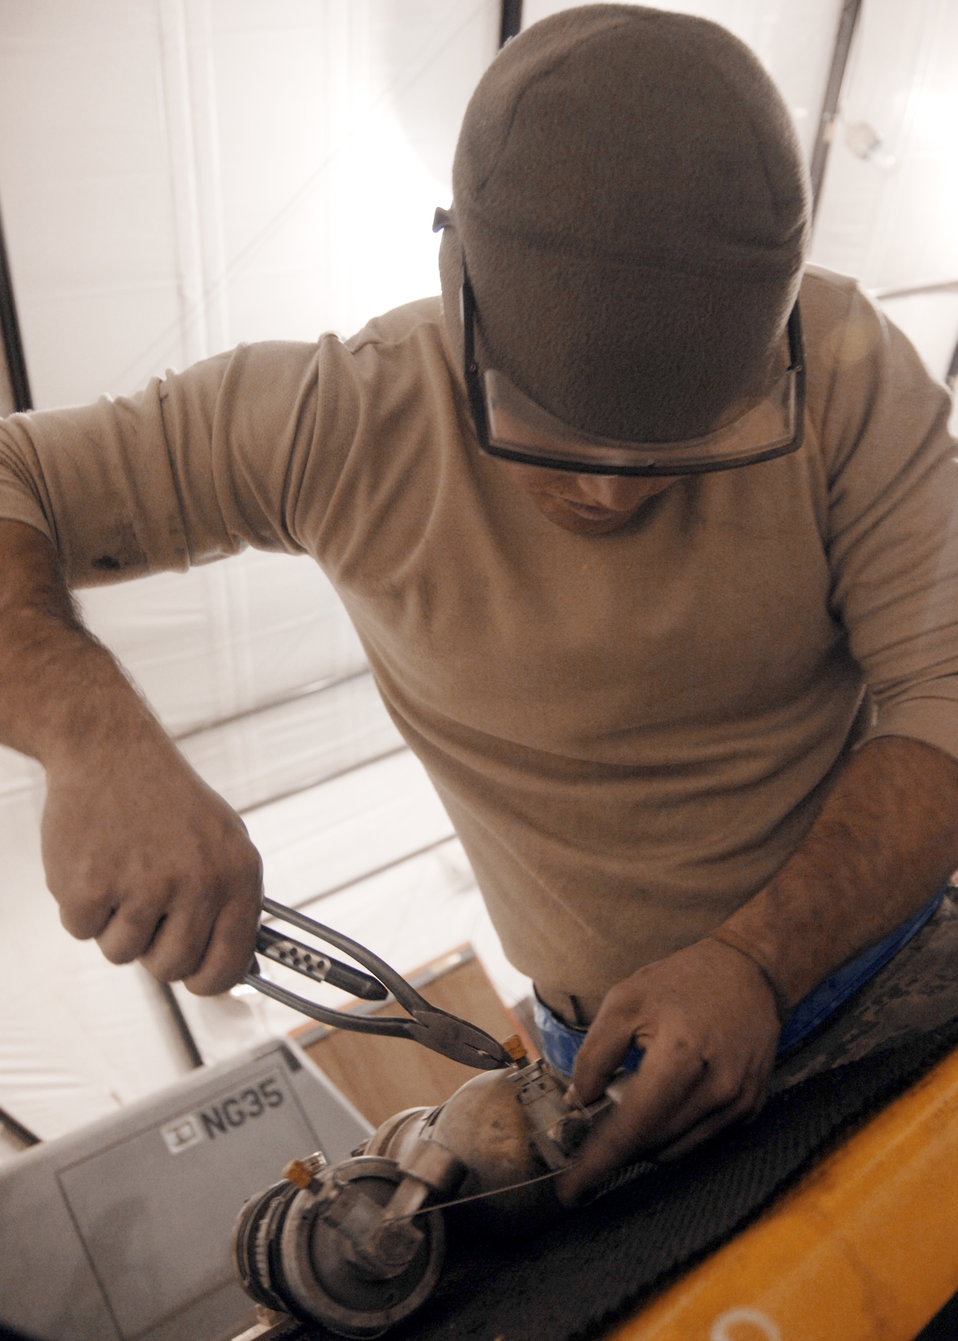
Maintainers keep aircraft soaring

Airman 1st Class Jake Gallet safety wires the accumulator servicing valve Dec. 10, 2009, at Kandahar Airfield, Afghanistan. Safety wire ensures the bolts will not loosen during flight due to vibrations. Airman Gallet is a crew chief with the 451st Expeditionary Maintenance Squadron maintenance flight.